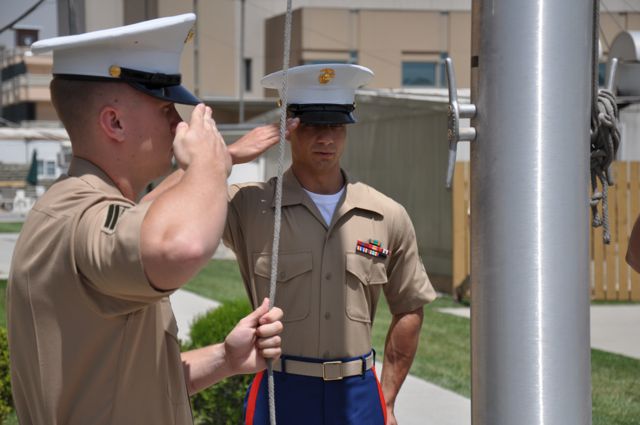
Memorial Day at US Embassy in Kabul